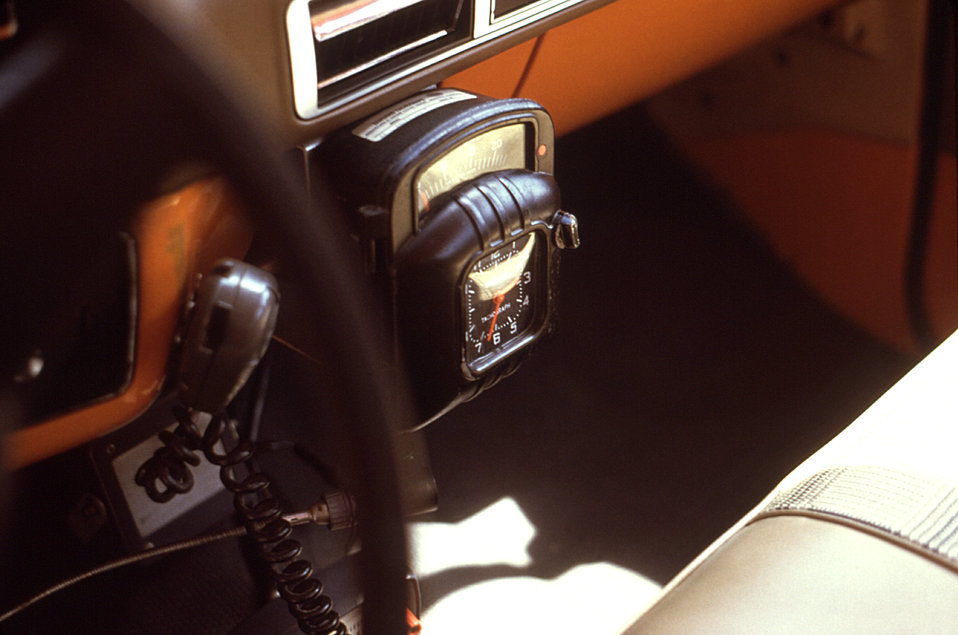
This 1981 image depicts a close-up view of a truck-mounted LECO-HD ULV (ultra-low volume) non-thermal fog generator's tachograph that had been mounted in the truck's cab.